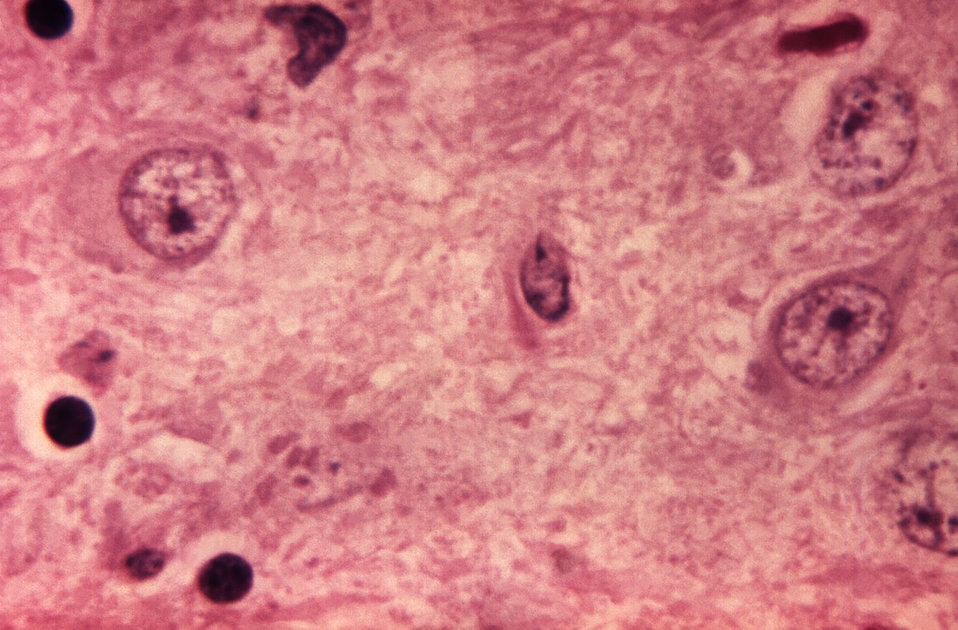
This micrograph, prepared using an H&E stain, depicts the histopathologic changes associated with rabies encephalitis.